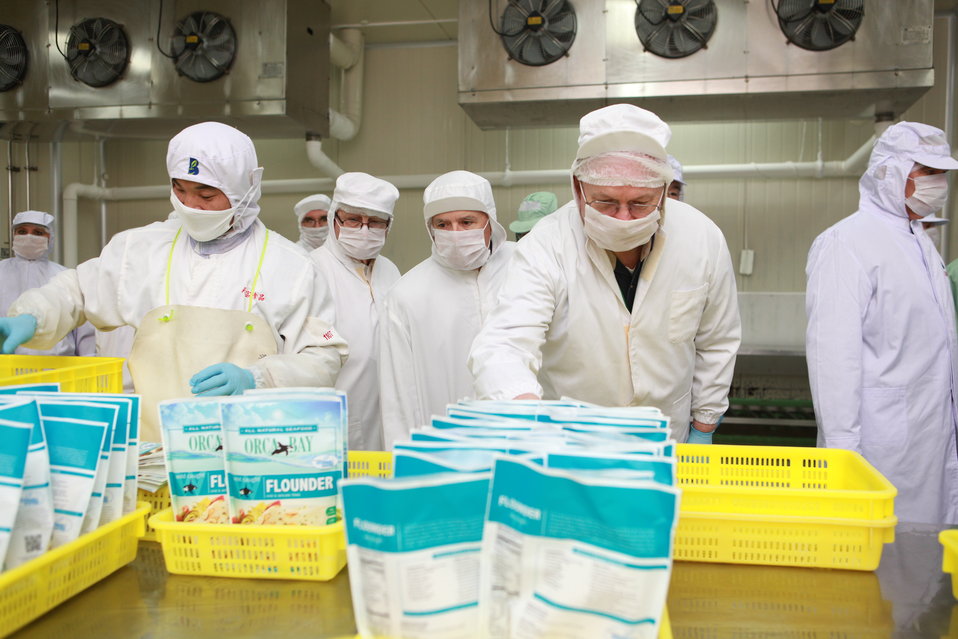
U.S. Department of Agriculture (USDA) Farm and Foreign Agricultural Services (FFAS) Under Secretary Michael Scuse tours a seafood processing operation at Tianbao in China on May 6, 2004. Tianbao is a Chinese company that imports large amounts of seafood, dairy, and fruit products from the U.S.